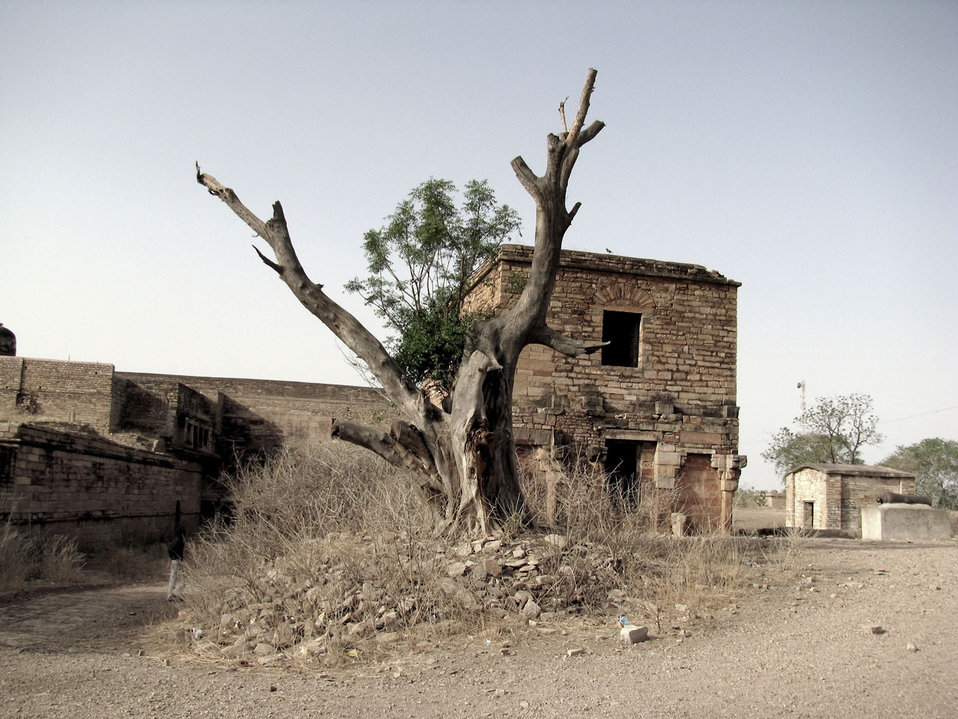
The ruined fort

Gwalio fort.